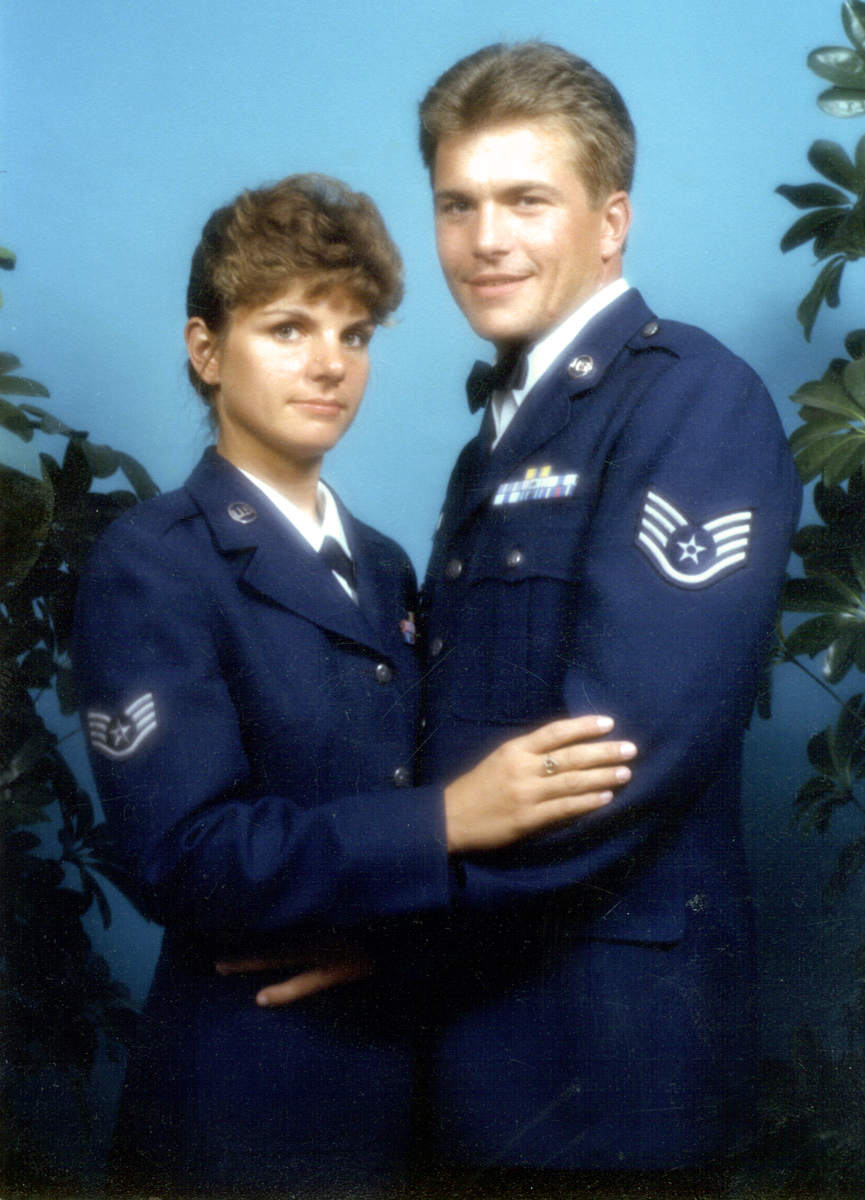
Two chiefs, one marriage, love for Air Force

HICKAM AIR FORCE BASE, Hawaii -- Then Staff Sgts. Roger and Lisa Sirois were on their way to making the Air Force a career. Now, the two share the rank of chief master sergeant. They married after high school in 1980 and then joined the Air Force together.